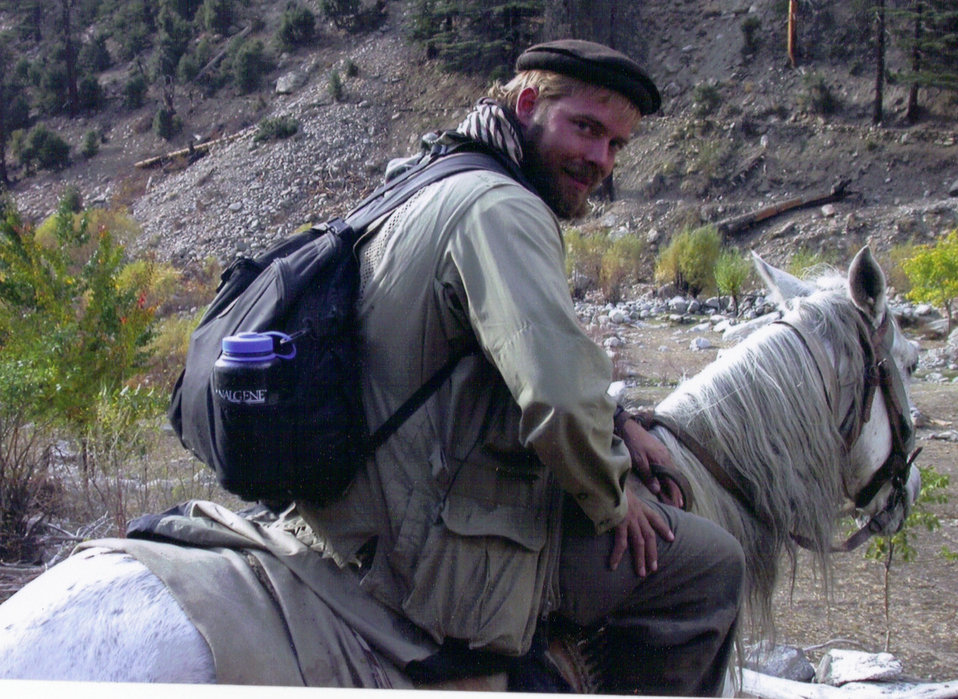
Riding local transportaion.

Master Sgt. Kenneth Huhman deployed to Afghanistan in 2007. Sergeant Huhman, a combat controller assigned to 23rd Special Tactics Squadron, recieved two Bronze Stars with valor during a ceremony held recently at Lackland Air Force Base, Texas.